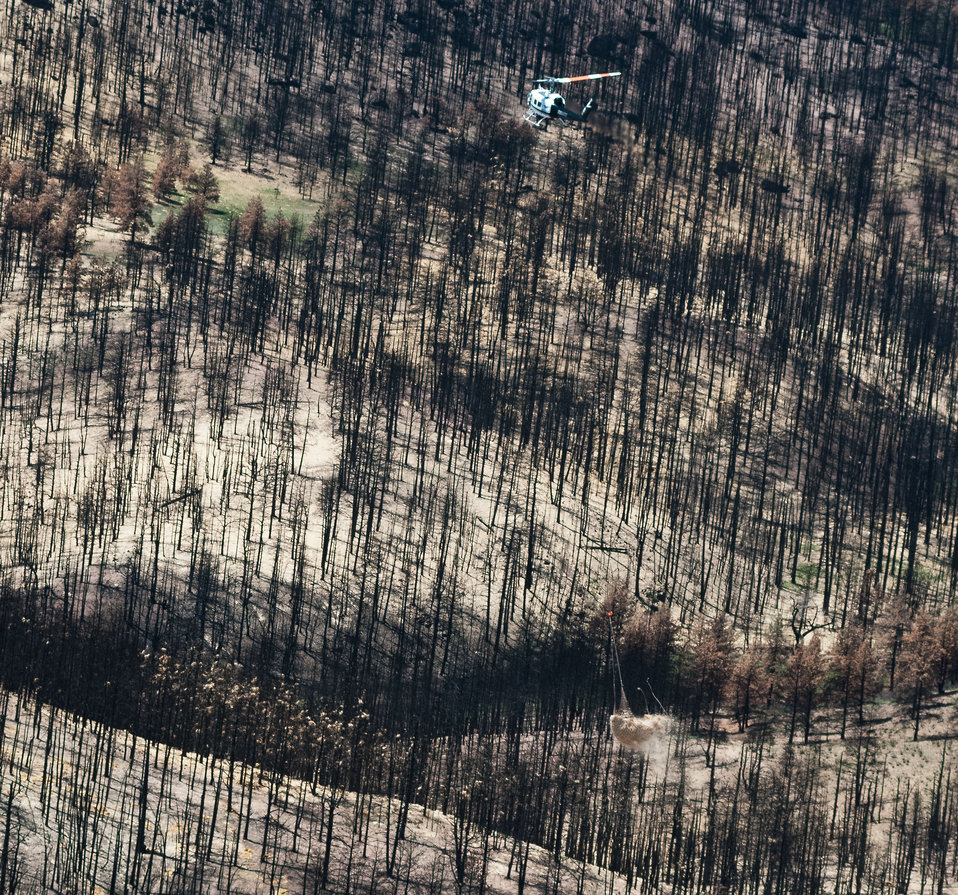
Mountain West Helicopter pilot Thierry Richards, releases one ton of straw from his Bell UH-1H helicopter on to a burned out area of the Poudre Canyon mountainside near Fort Collins, Colo., on Friday, July 20, 2012. This is an aerial application of straw will mitigate soil and ash runoff from the mountainous terrain leading to Seaman Reservoir, drinking water resource for the City of Greeley. Forest Service lands receive straw, while private and other lands receive a seed mix and straw to promote ground cover plant growth on ash-covered lands. In total, 1,800 tons of straw will be applied during the 14-day operation. One quarter of the cost was paid by the City of Greeley and the U.S. Department of Agriculture funded the remainder. The Hewlett Gulch Fire was started by a camper’s alcohol stove, on May 14, at the saddle of a picturesque mountain ridge along the Hewlett Gulch Trail of Poudre Canyon, in the Roosevelt National Forest, 60 miles north of Denver. At it’s peak more than 400 firefighters were battling fires being pushed by 50 mph winds that helped blacken over 12-square-miles of dry ground cover, brush and trees. Many of the trees were already dead and tinder dry from beetle-kill. Their efforts have successfully kept water in the reservoir clean and clear, while downstream water flow has gone from famous Colorado clear water to nearly black flows of water heavily laden with ash, silt, and burnt debris that recent thunderstorms have already washed down from the mountainsides.